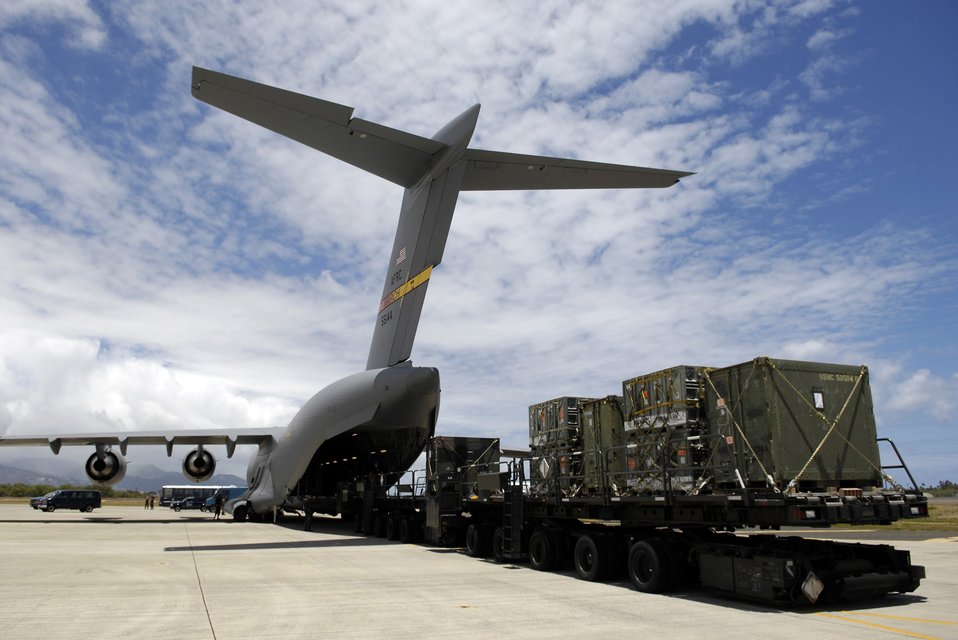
Wright-Patterson Airmen take over Hickam air operations

A C-17 Globemaster III is unloaded July 2 at Hickam Air Force Base, Hawaii. Reservists from the 87th Aerial Port Squadron from Wright-Patterson AFB, Ohio, are conducting their two-week duty with the 735th Air Mobility Squadron.